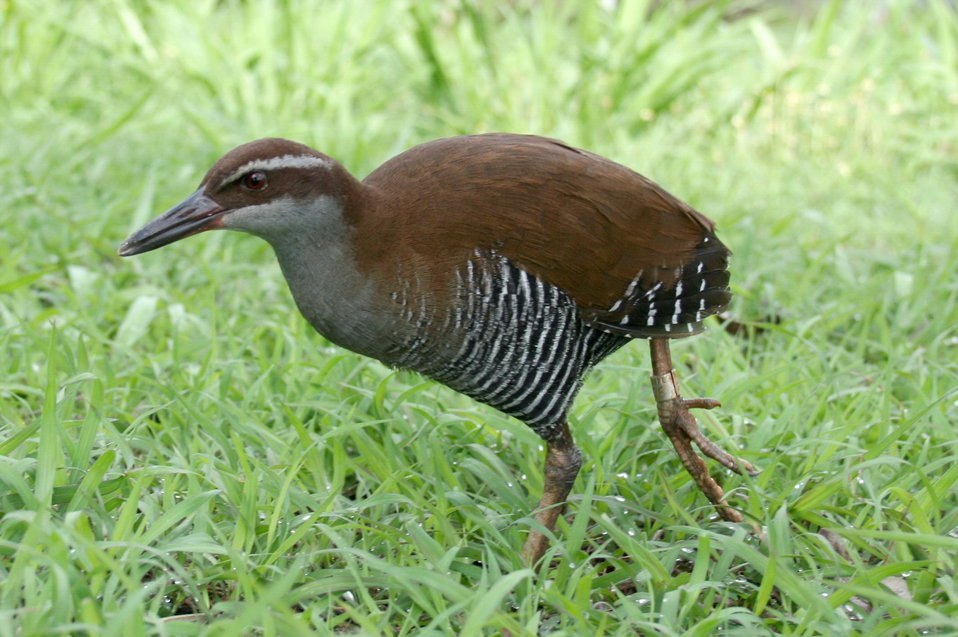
The U.S. Department of Agriculture (USDA) Animal Plant Health Inspection Service (APHIS) Wildlife Services (WS) works with the U.S. Fish and Wildlife Service to assist with the recovery of endangered California clapper rails. These shy birds are only found in the San Francisco and San Pablo Bay area. Most clapper rail habitat has been destroyed or is surrounded by business parks and subdivisions. Predation damage management, recent land purchases, and the restoration of salt ponds help to protect and maintain critical habitat for this endangered species.